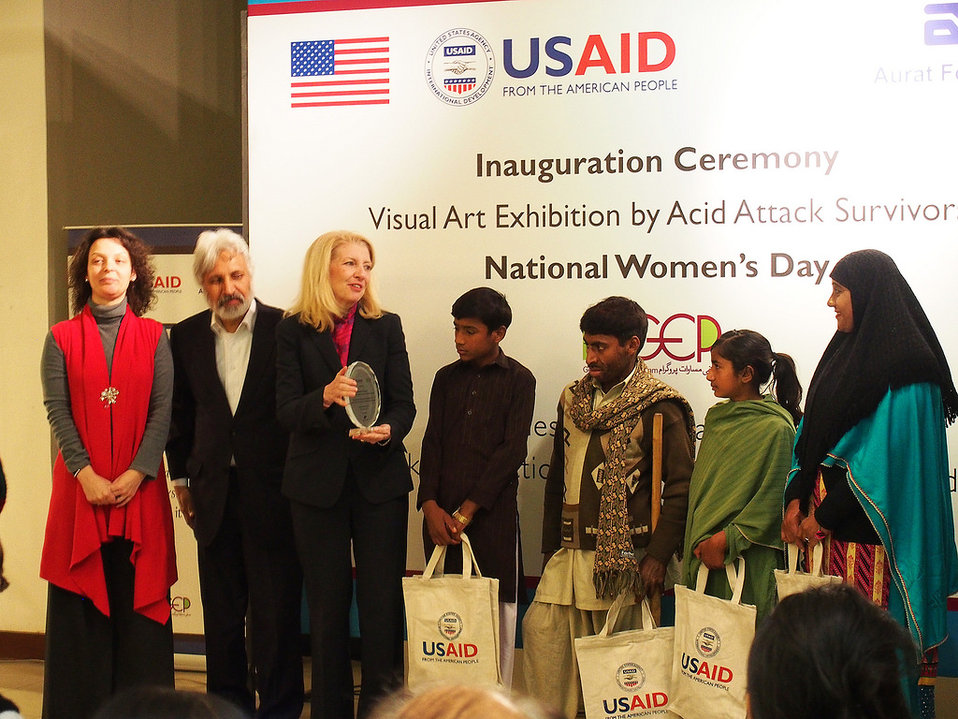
Catherine Russell, U.S. Ambassador-at-Large for Global Women's Issues, presents gifts to acid attack survivors at a photo exhibition at Pakistan National Council of Arts in Islamabad on February 12, 2014.

The event was sponsored by USAID and its partner, the Aurat Foundation, which implements the Gender Equity Program (GEP), a program focused on addressing women’s access to justice. The photographers are beneficiaries of the Acid Survivors Foundation (ASF), a GEP grantee.